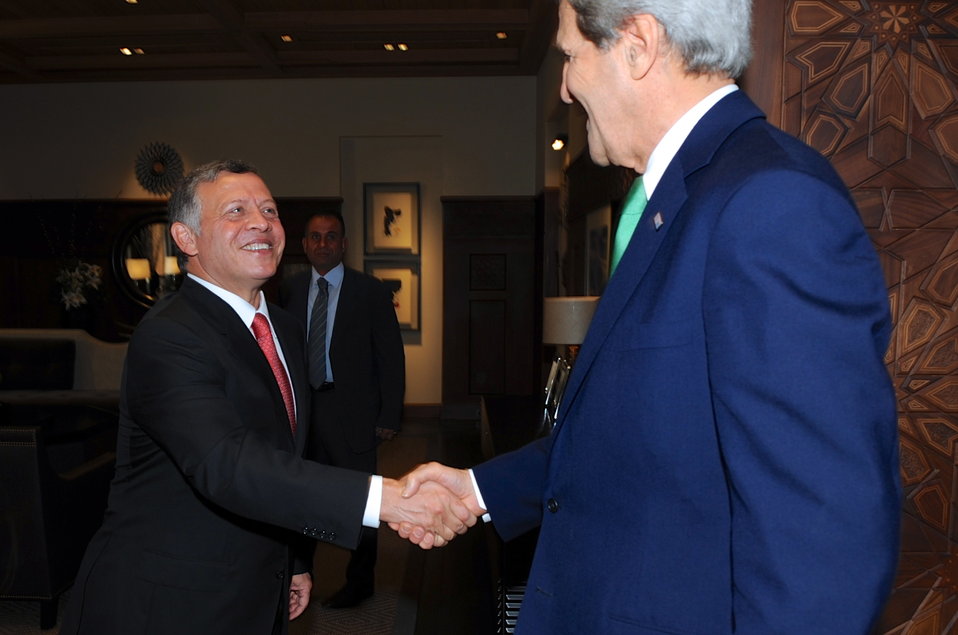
Secretary Kerry Is Greeted by Jordanian King Abdullah II in Amman

U.S. Secretary of State John Kerry is greeted by King Abdullah II of Jordan as he arrives at Al Hummar Palace in Amman, Jordan, on November 7, 2013, for talks focused on Middle East issues.